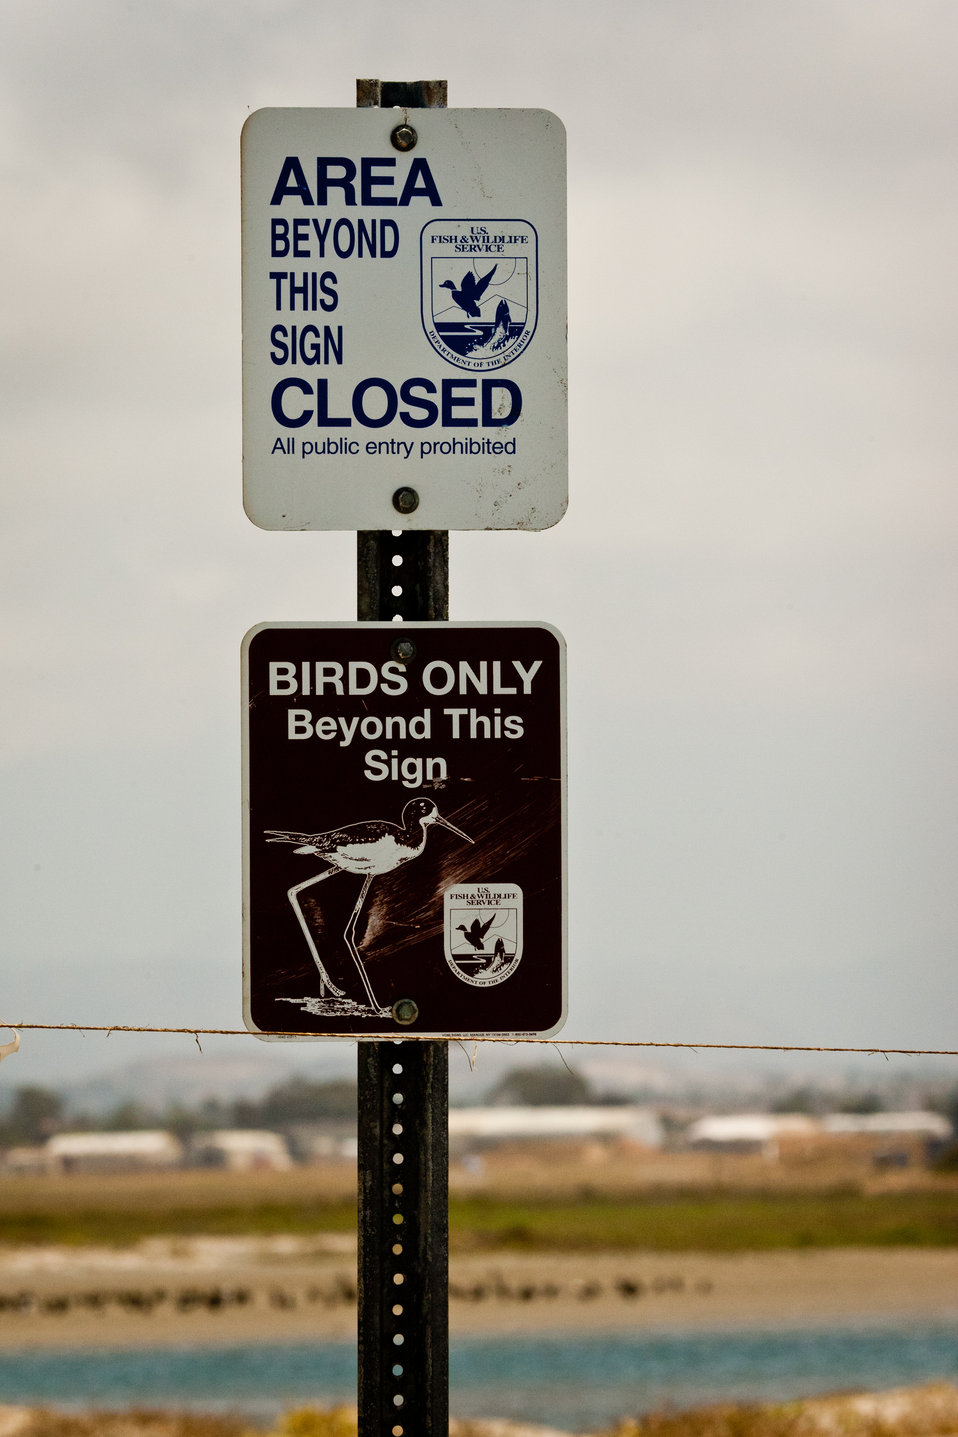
Birds only!

In order for the nesting birds to feel they are in a protected area from people, an imaginary line is established between the nesting birds and the beach visitors, by putting up boundary signs